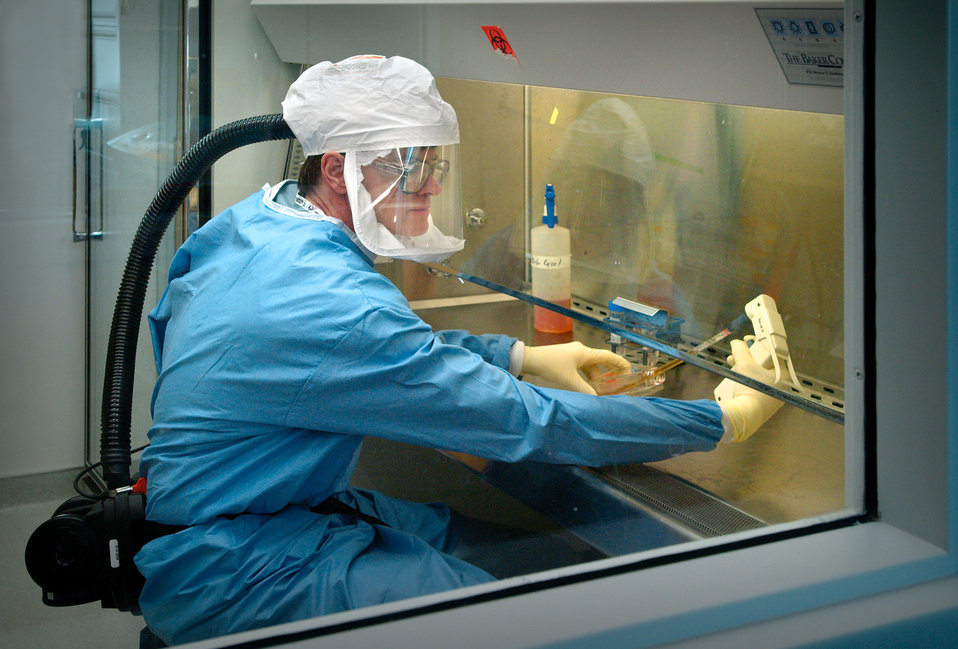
This 2005 photograph depicts one of the Centers for Disease Control's (CDC) staff microbiologists using an electronic pipetter to extract reconstructed 1918 Pandemic Influenza Virus from a calibrated vial containing a supernatant culture medium. The image was captured in a Biosafety Level 3-enhanced laboratory setting, where this scientist was working beneath a flow hood, whereupon, air outside the hood is pulled into the hood's confines and is then filtered of any pathogens before being re-circulated inside the self contained laboratory atmosphere.